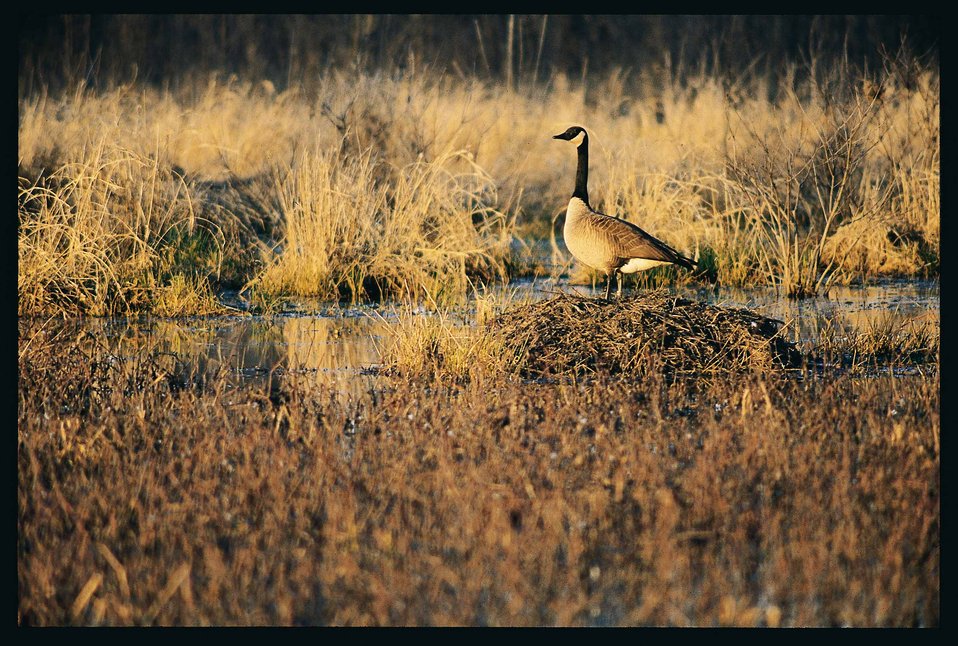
Habitat for ducks and geese on a restored wetland in Van Buren County, Iowa.